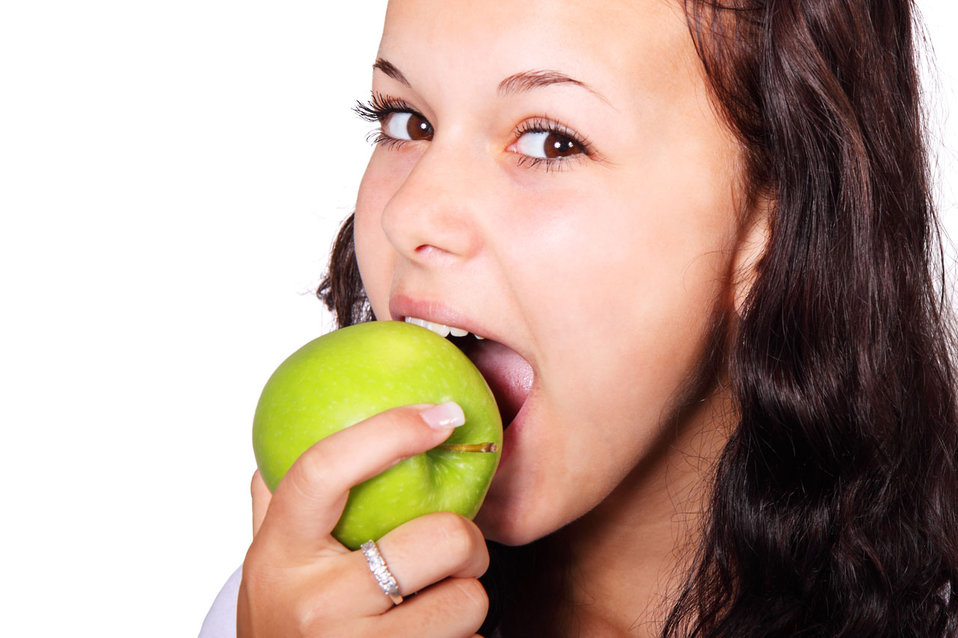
Woman eating apple

Young woman biting a green apple.